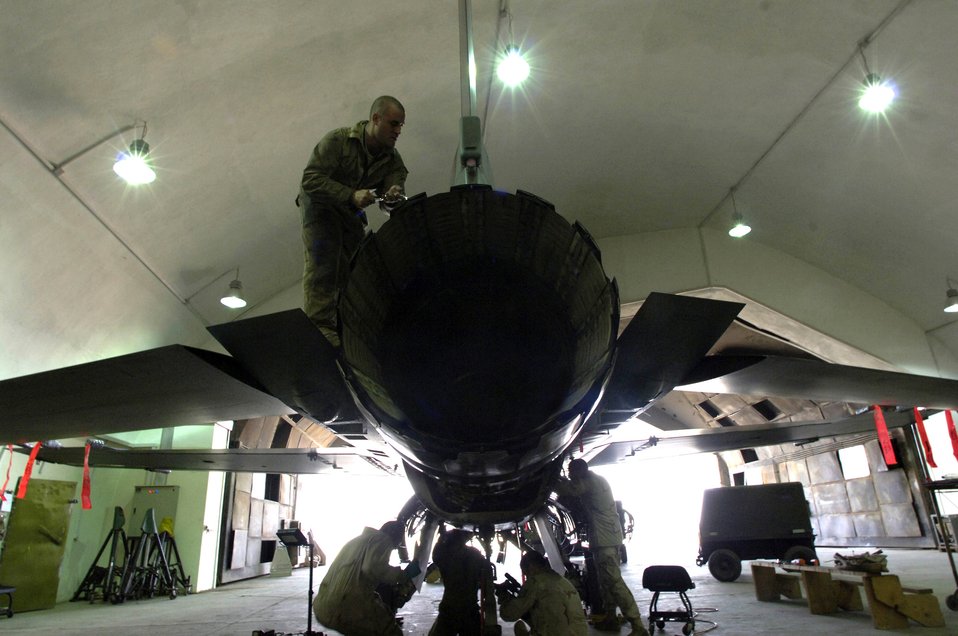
Phase team keeps F-16s in the fight

Staff Sgt. Justin Johnson removes screws from the rudder of an F-16 Fighting Falcon April 16 at Balad Air Base, Iraq. Sergeant Johnson is assigned to the 332nd Expeditionary Maintenance Squadron as a phase inspection team member. He is deployed here from the 35th Aircraft Maintenance Squadron at Misawa AB, Japan.